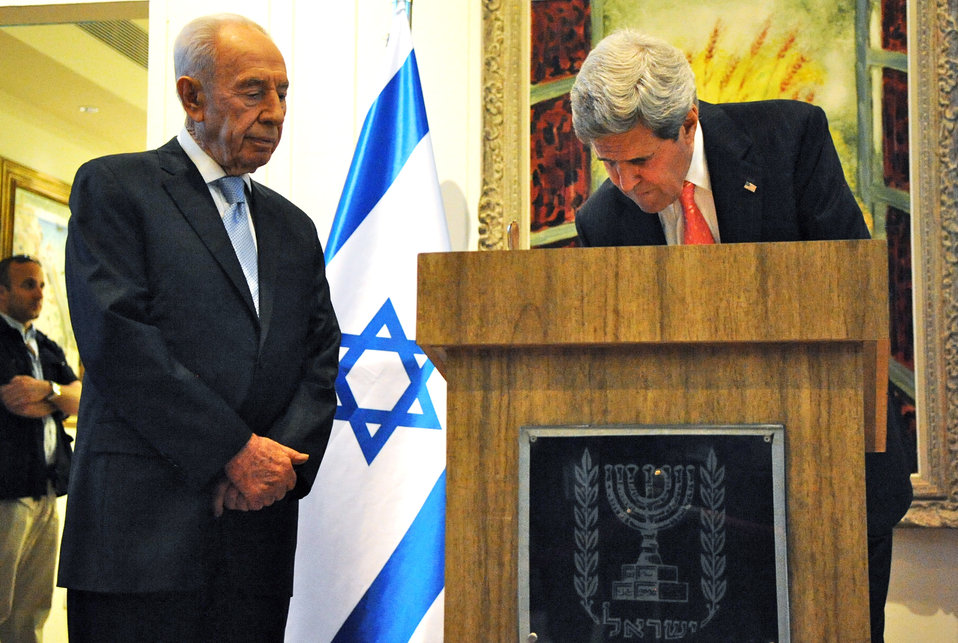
Secretary Kerry Signs Israeli President Peres' Guestbook

U.S. Secretary of State John Kerry signs the guestbook upon visiting the home of Israeli President Shimon Peres in Jerusalem on May 23, 2013.